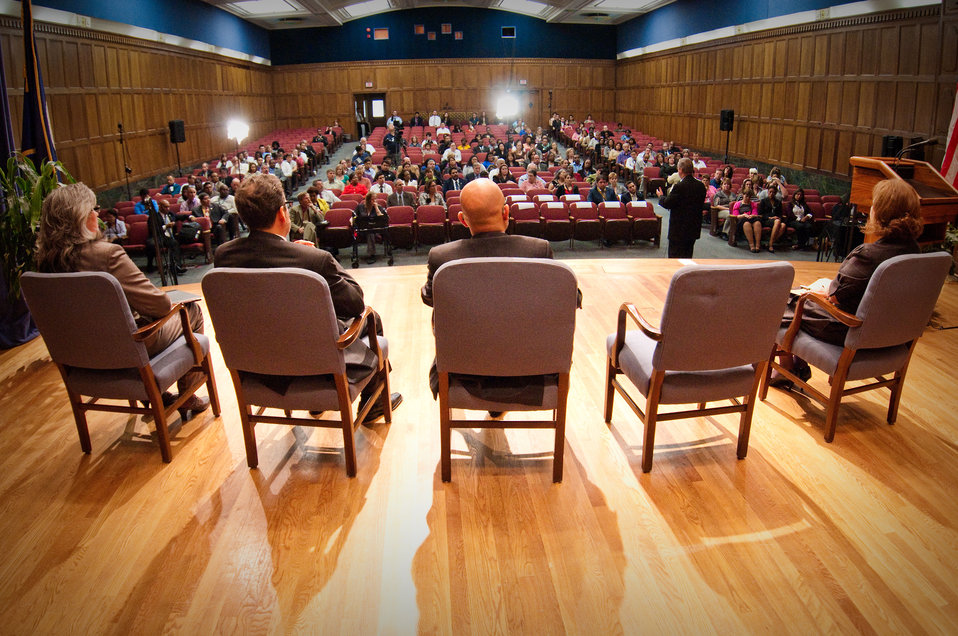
Agriculture Secretary Tom Vilsack receives a standing ovation as he departs the Jefferson after his keynote address for National Hispanic Heritage Month at the United States Department of Agriculture (USDA), in Washington, D.C. on Thursday, September 15, 2011.